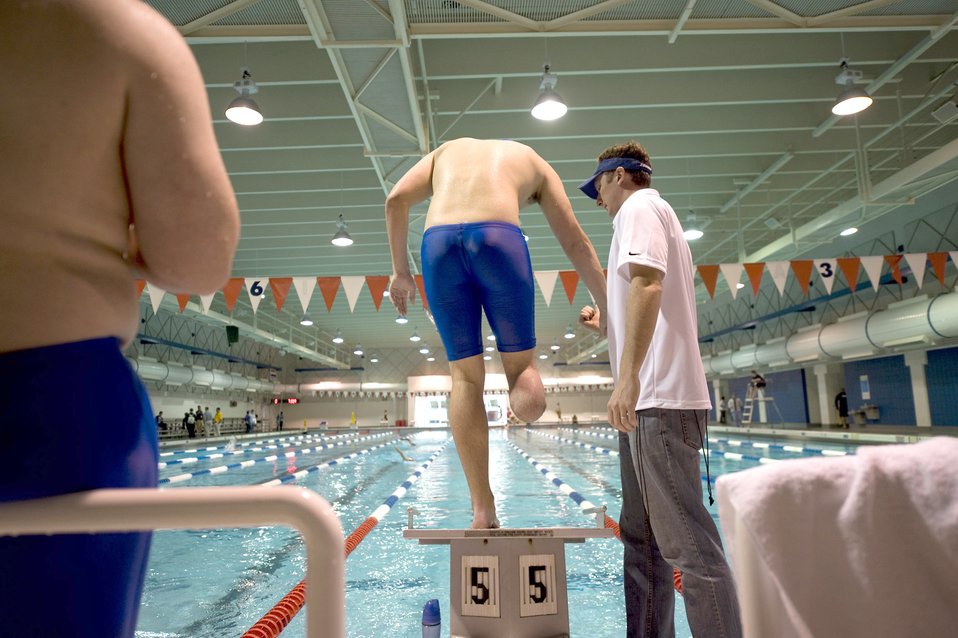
Warrior Games swim practice

Second Lt. Ryan McGuire prepares to dive off the starting block during swim practice May 11, 2010, at the Olympic Training Center in Colorado Springs, Colo.